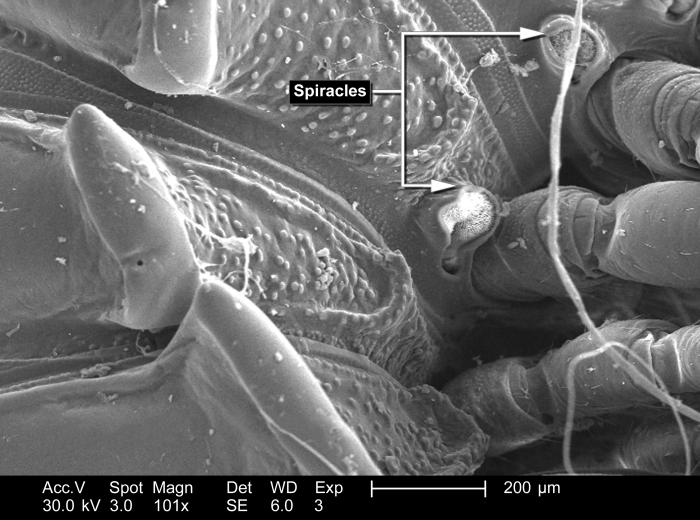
Millipede exoskeleton

Magnified 101x, this scanning electron micrograph (SEM) depicted the many variations in patterns displayed on the chitinous exoskeletal surface of this millipede that had been found deceased on the ground in the Decatur, Georgia suburbs. Note the spiracles through which the insect carries out the inspiration and expiration of its air supply.